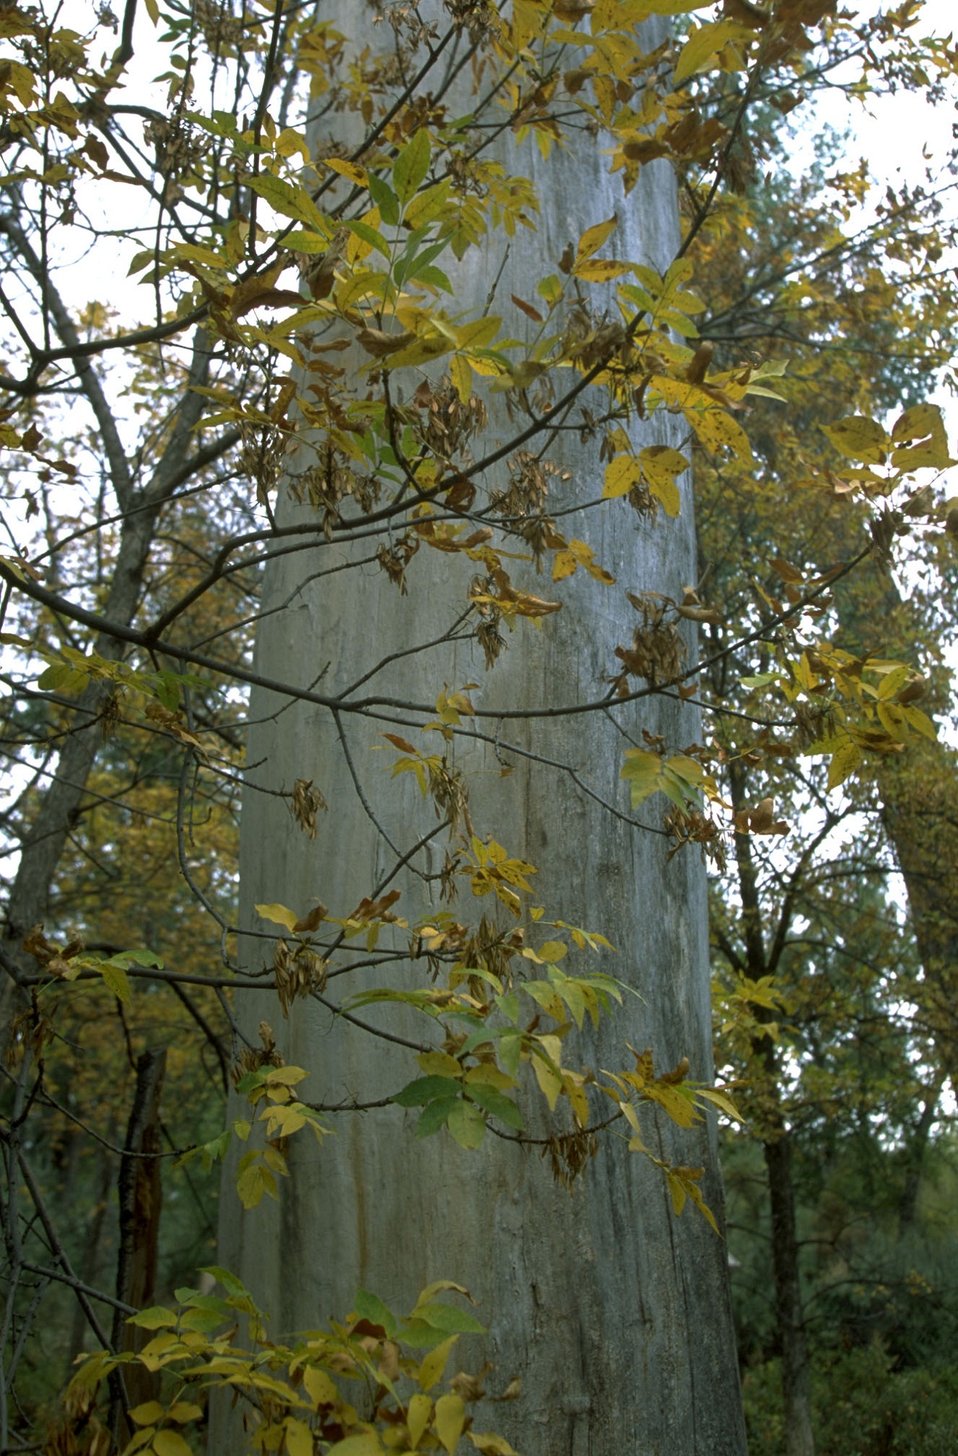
Leaves on a tree with a big trunk, turning to autumn colors